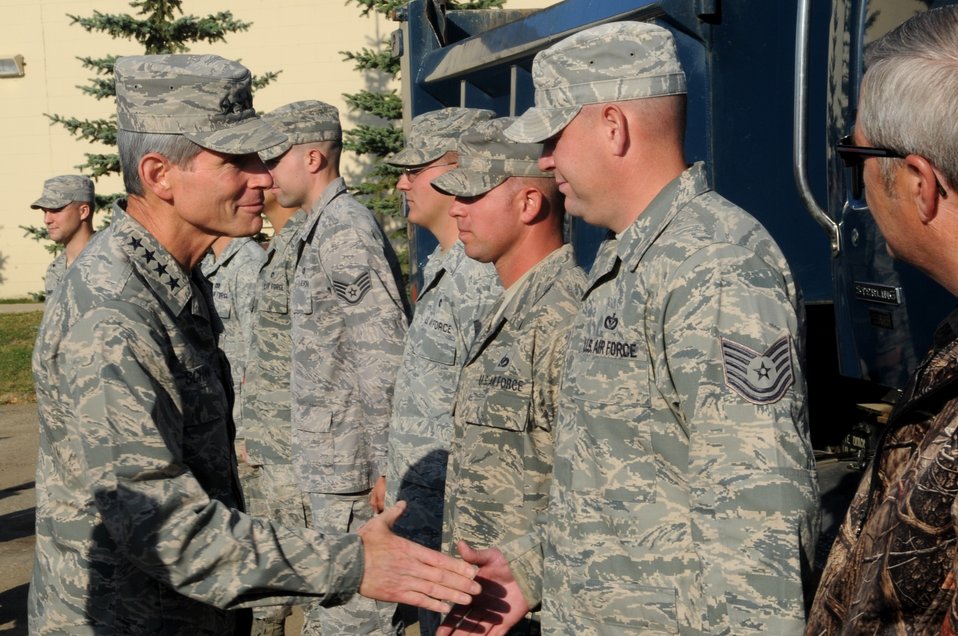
CSAF visits Minot AFB

Air Force Chief of Staff Gen. Norton Schwartz greets Airmen Oct. 4, 2011, during a tour of Minot Air Force Base, N.D. Schwartz expressed his admiration for all the hard work Airmen from the 5th Civil Engineer Squadron contributed during the flooding of the Souris River in Minot, N.D., and surrounding communities. The Airmen are assigned to the 5th CES.